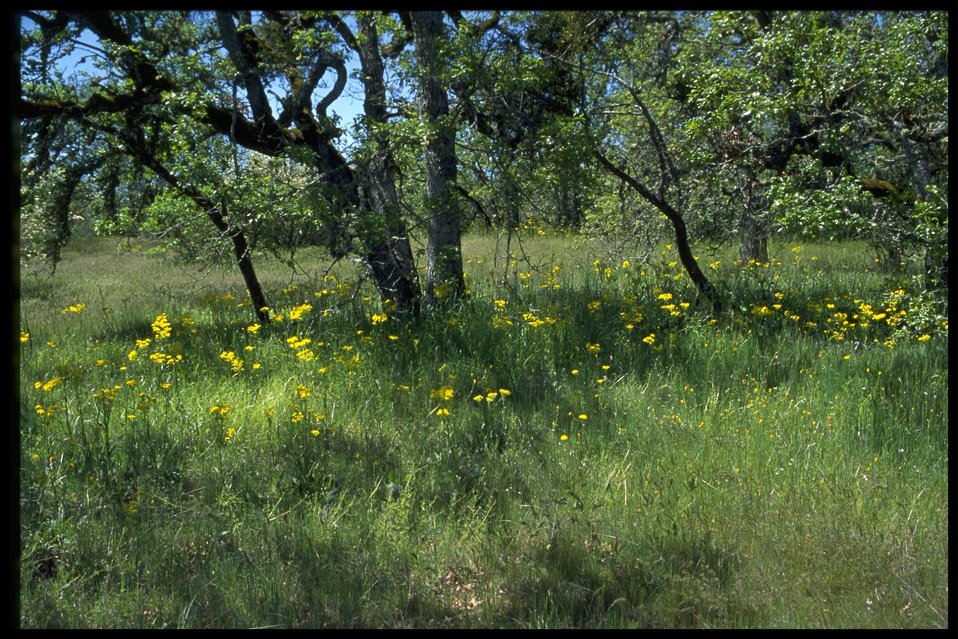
Farshot of Senecio intefermis.